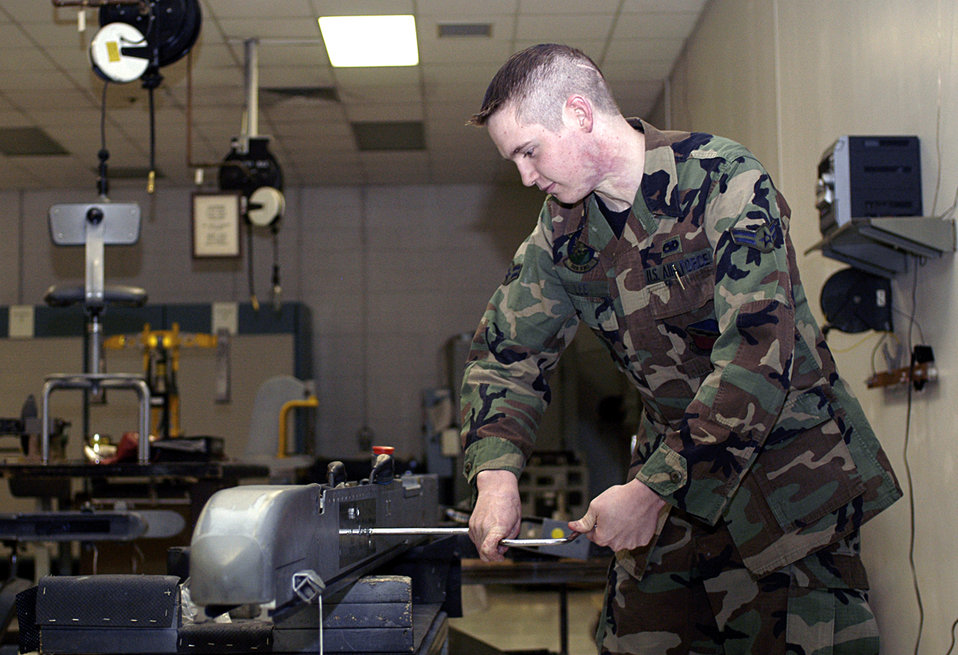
Airman volunteers at burn camp

HILL AIR FORCE BASE, Utah -- Airman 1st Class Brandon Lee tightens a bolt on a piece of armament equipment. He suffered burn injuries over one-third of his body when he was 4 years old; now he volunteers at a camp for child burn victims in Georgia. Airman Lee is an armament systems specialist with the 388th Equipment Maintenance Squadron here.